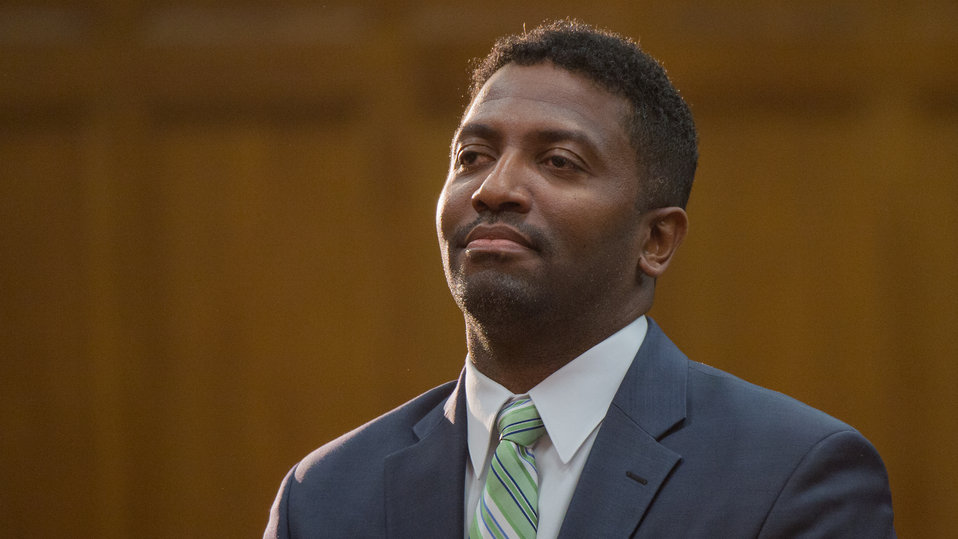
U.S. Department of Agriculture (USDA) personnel who have served, or are serving in a Uniformed Armed Service are called by their past or present Service to stand and be honored with the singing of each of the major Service songs sung by soprano Amy Keesun Kwon, during the 2013 USDA Veterans’ Day Observance, whose theme is “VALOR, COURAGE, SACRIFICE – HONORING ALL WHO SERVED,” in Washington, DC, on Wednesday, November 20, 2013.